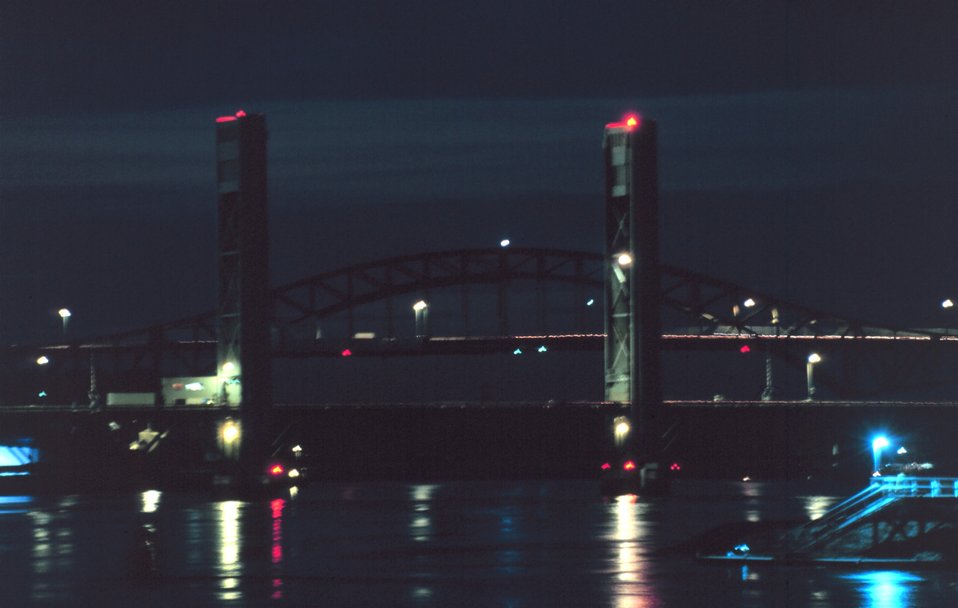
A Portsmouth Harbor Bridge.